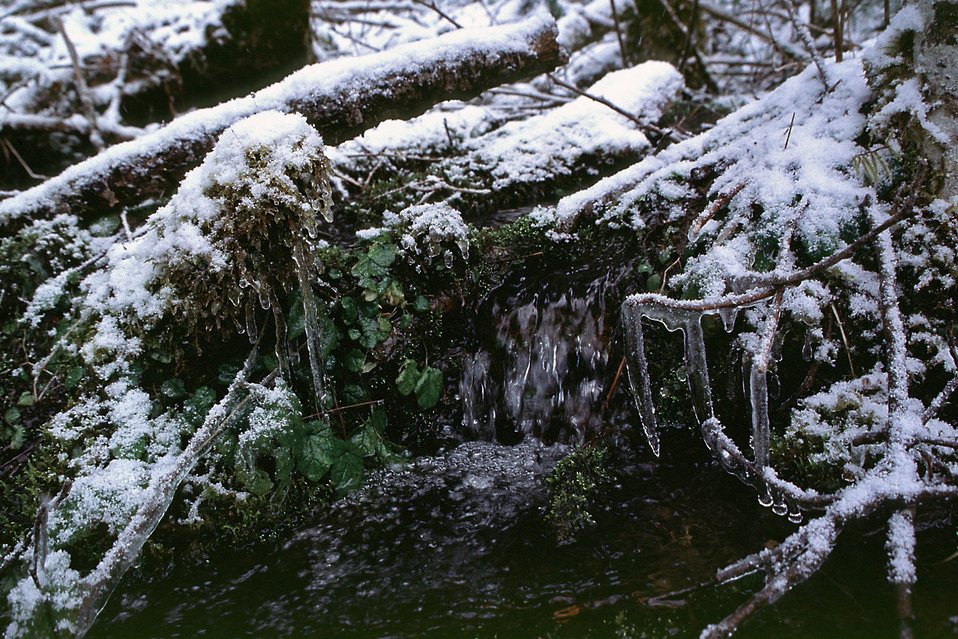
Mid Winter forest scene in the Mollala Corridor.